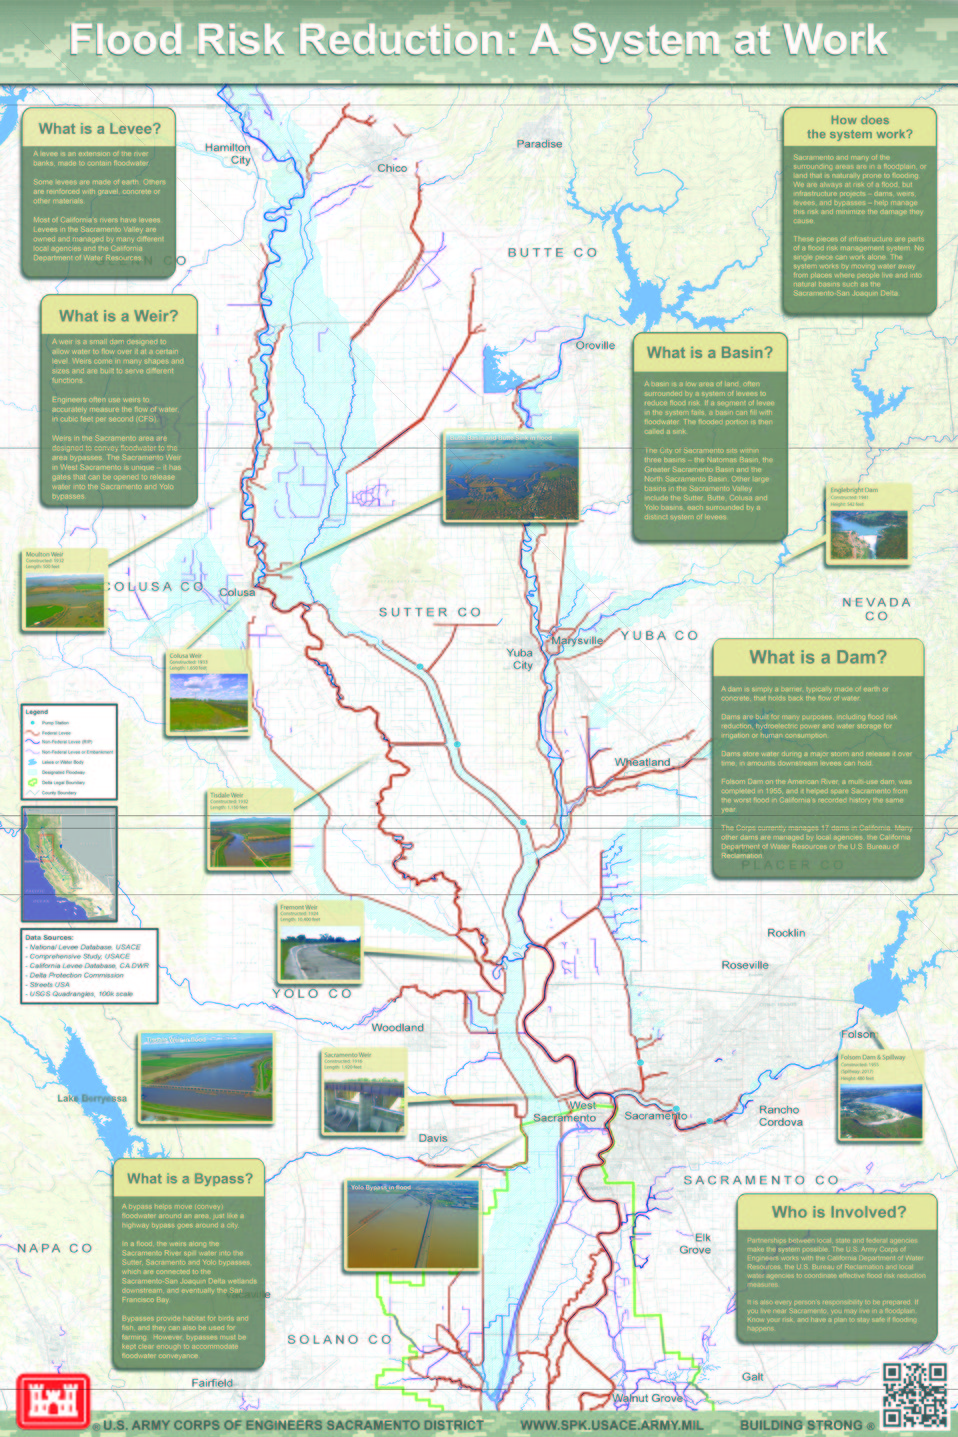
Sacramento Valley flood risk reduction infrastructure

We produced this map as an educational aid for understanding the complex system of dams, weirs, bypasses and levees that works together to reduce flood risk for those of us living in central California's Sacramento Valley. For a high-resolution PDF file of the map suitable for poster-size printing, write us at spk-pao@usace.army.mil.